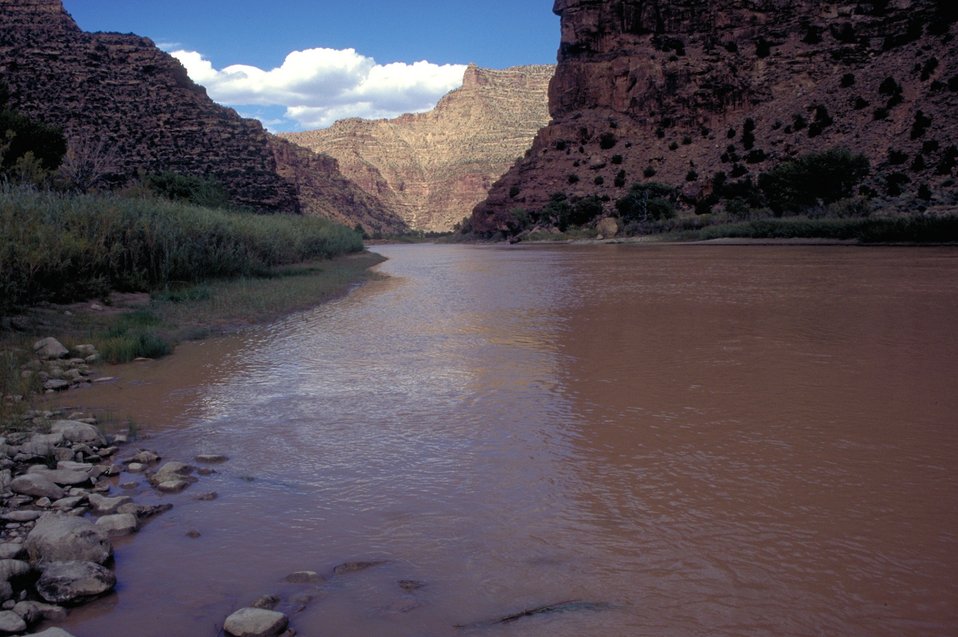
Desolation/Gray Canyons near Price, Utah.